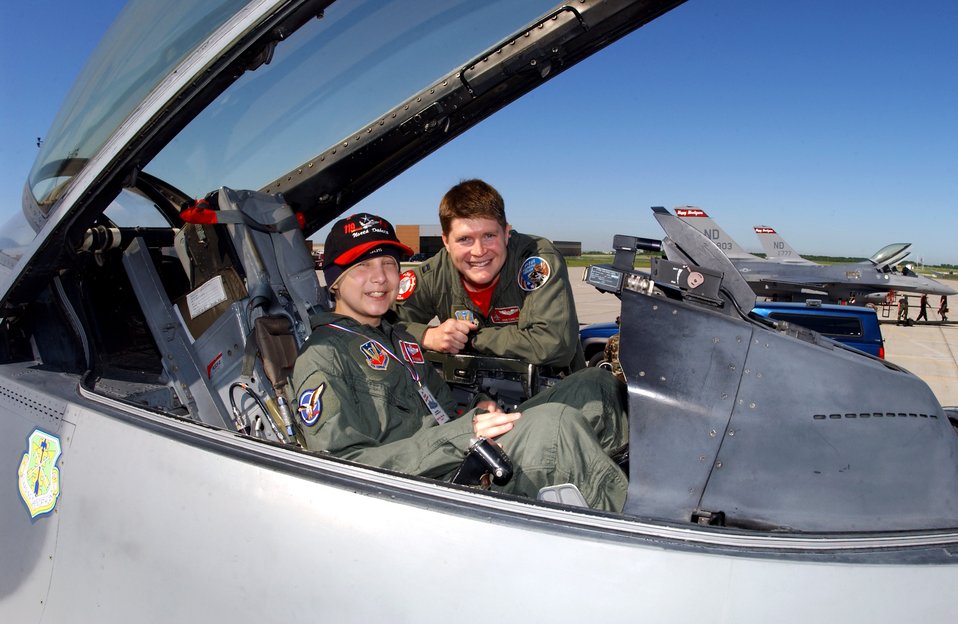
Pilot for a day

Capt. Joshua Carlson helps